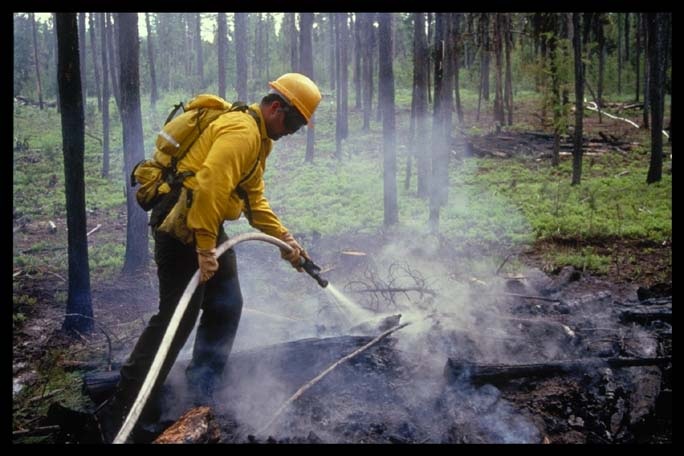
Engine crewmember